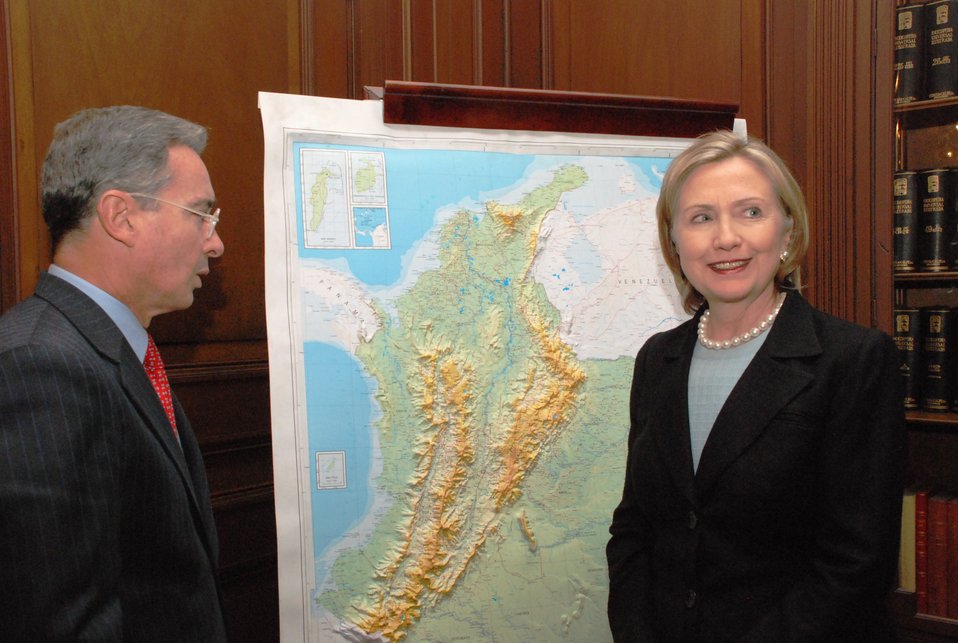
Secretary Clinton and Colombian President Discuss Issues During Private Meeting

U.S. Secretary of State Hillary Rodham Clinton and Colombian President Uribe consult during a private meeting in Bogotá, Colombia on June 9, 2010.